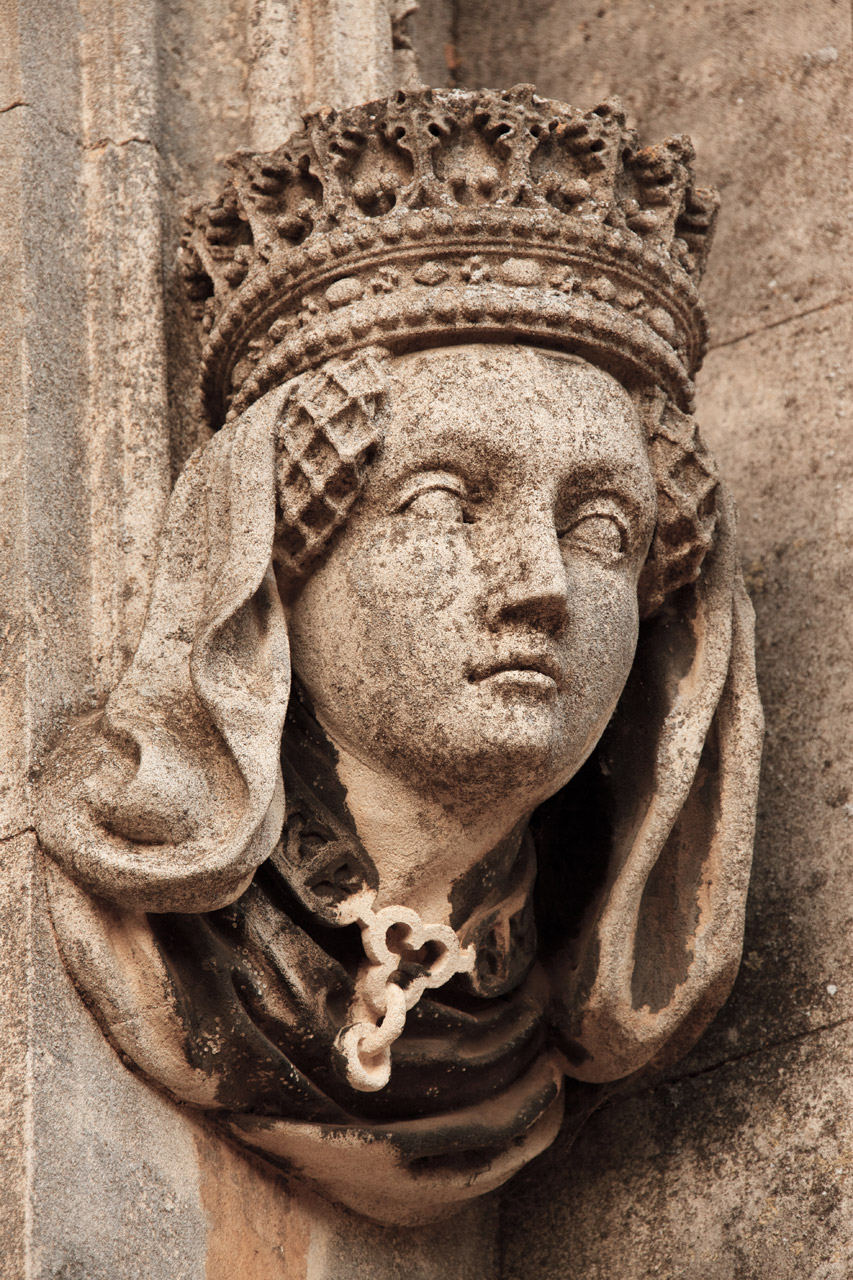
Head statue on building

Royal head statue on an old building.